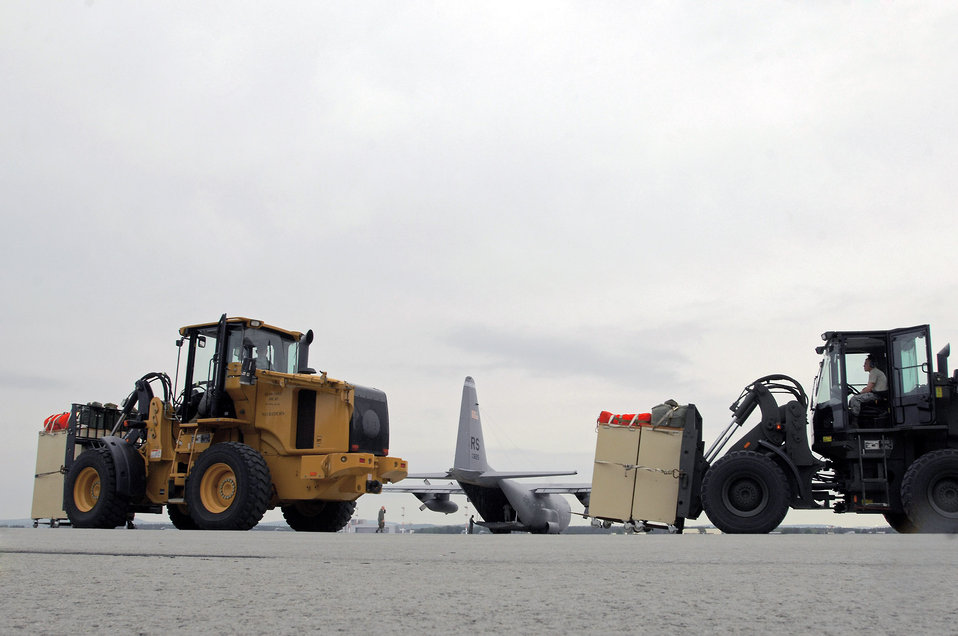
Loading up to support NASA

1st Combat Communication Squadron Airmen prepare to load lifesaving equipment onto a C-130 Hercules May 9 at Ramstein Air Base, Germany. The Airmen supported NASA's launch of Space Shuttle Atlantis May 11.